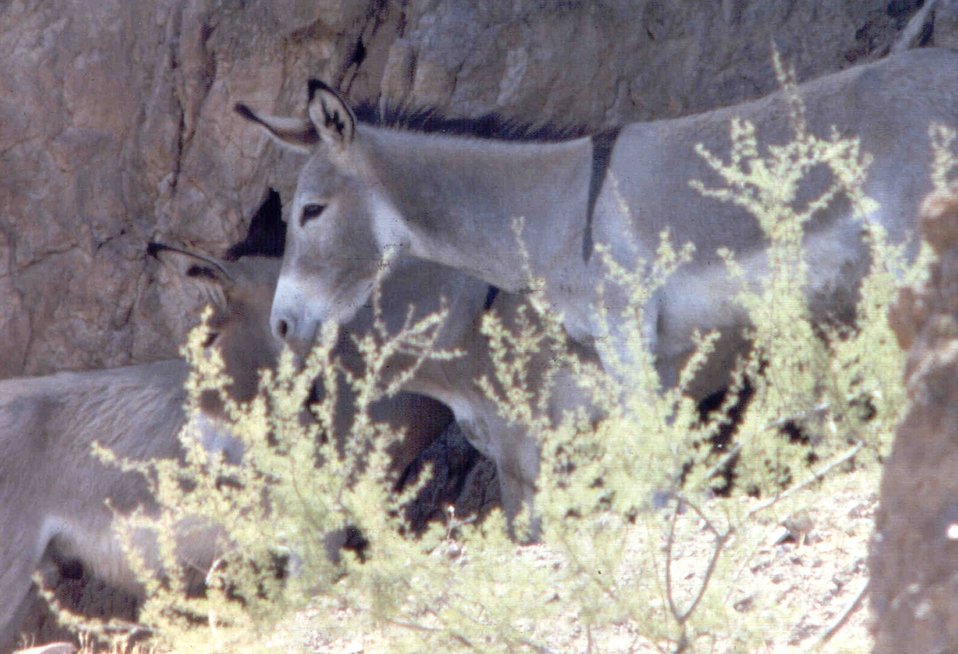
Wild Burro at McHeffy Spring, Black Mountains